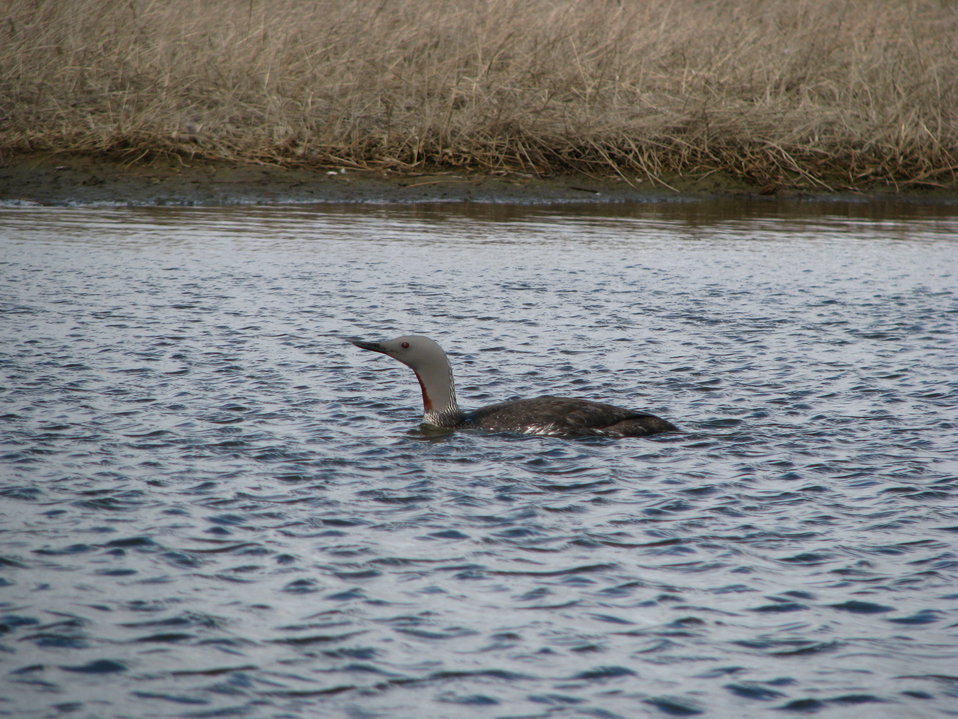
Red throated loon

USFWS Yukon Delta NWR